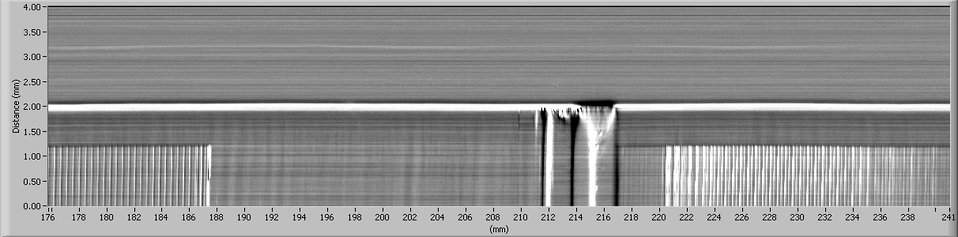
Magnetic Tape Analysis

This image, produced by the new NIST forensic tape analysis system, clearly reveals an overdubbing. The new recording is visible from the left bottom of the image to about 188 millimeters on the distance counter, the large smudge at 216 mm was made by the erase head, and the original recording is visible starting at about 220 mm.